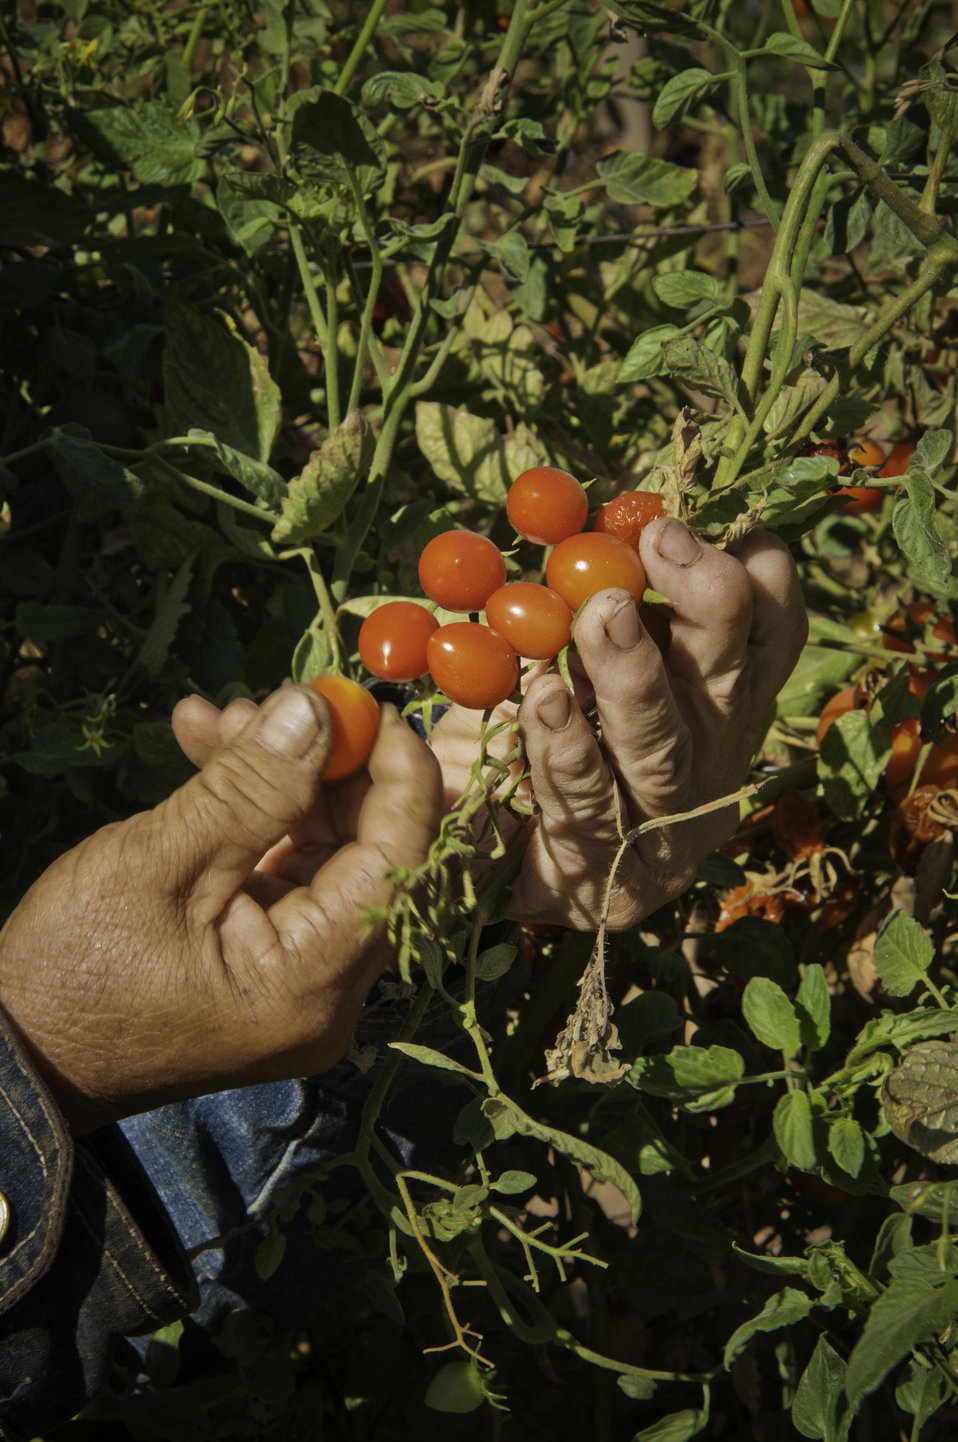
May Young Vu a Hmong farmer harvesting cherry tomatoes on her farm May's Flower's in Sanger, California May Young Vu a Moung farmer taking opo squash harvested in the morning on her farm May's Flower's in Sanger, California to be packed for the farmers market in the afternoon on Thursday, August 29, 2013.